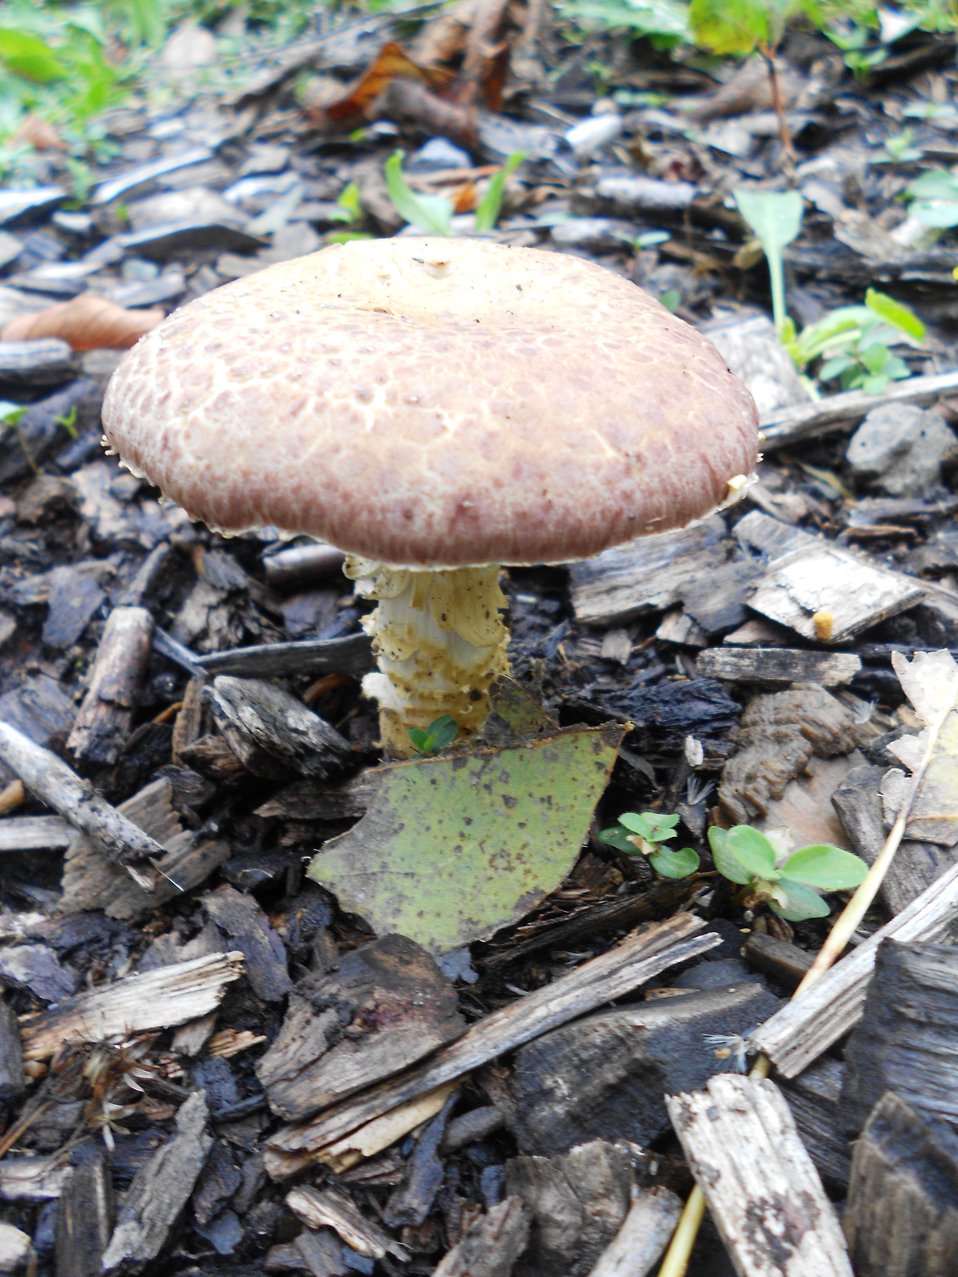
Mushroom growing in a wooded area

A woodland mushroom emerging from the forest floor